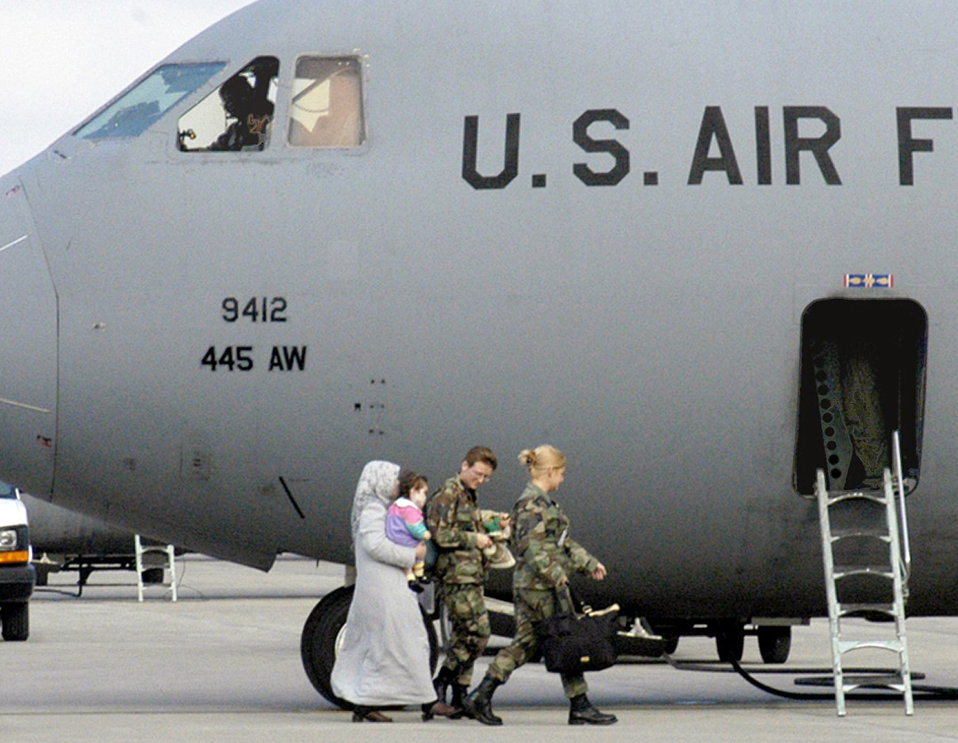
Airmen fly Iraqi baby home

WRIGHT-PATTERSON AIR FORCE BASE, Ohio -- An Iraqi baby and her mother prepare to board a C-141 Starlifter as they start their journey home from here. The baby received about six months of medical treatment at Children's Hospital in Columbus, Ohio.